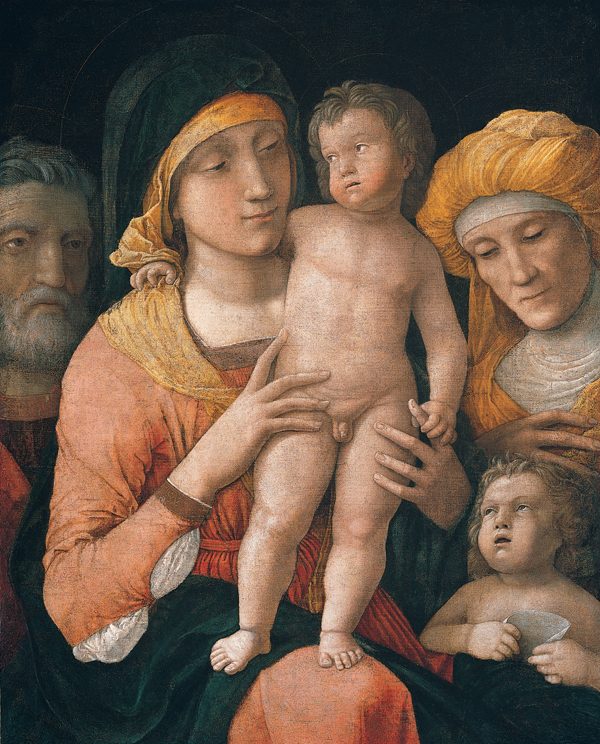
'The Madonna and Child with Saints Joseph, Elizabeth, and John the Baptist', by Andrea Mantegna